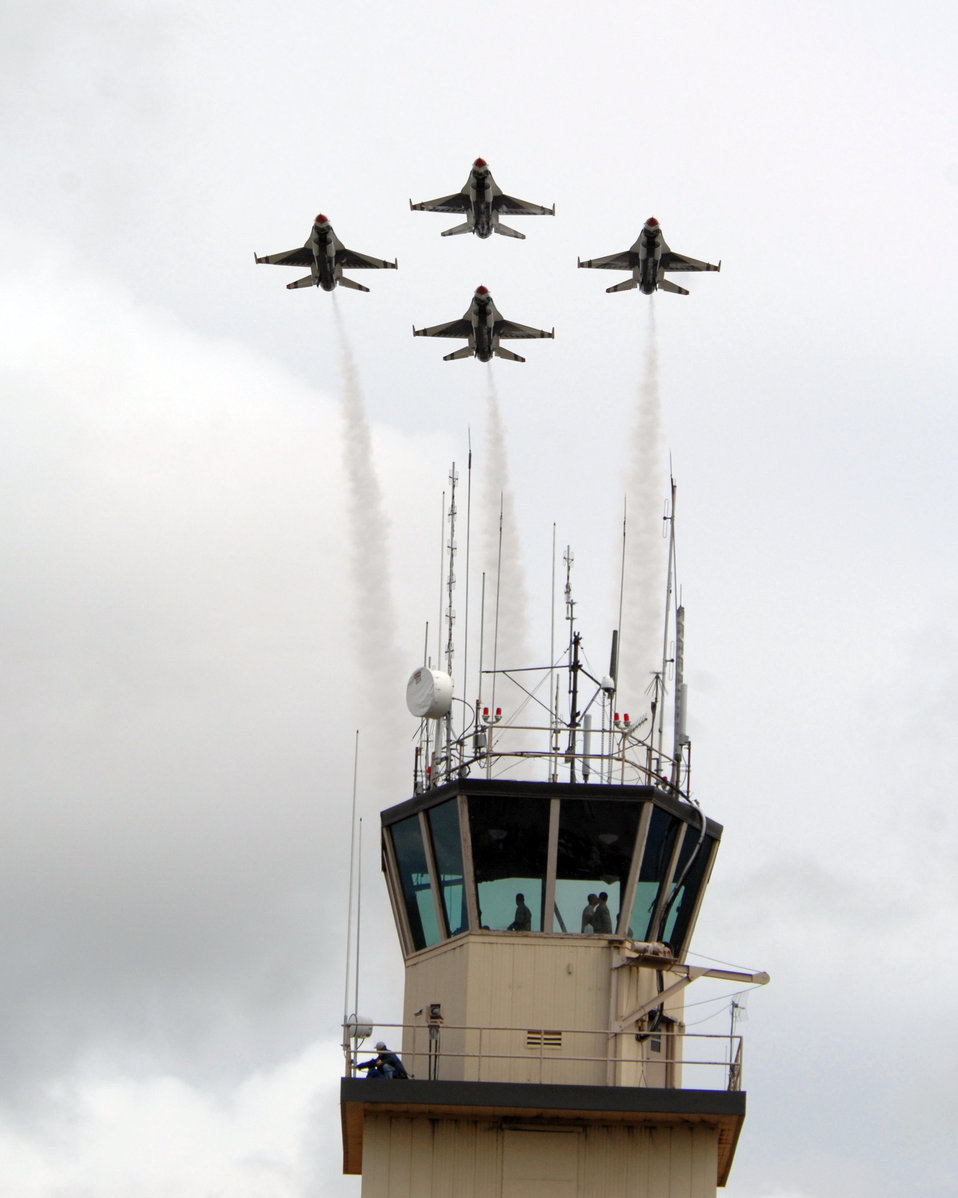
Thunderbirds 'Soar into Solstice' at Eielson

The U.S. Air Force Thunderbirds flight demonstration team flies over the Red-Flag Alaska tower during the 2008